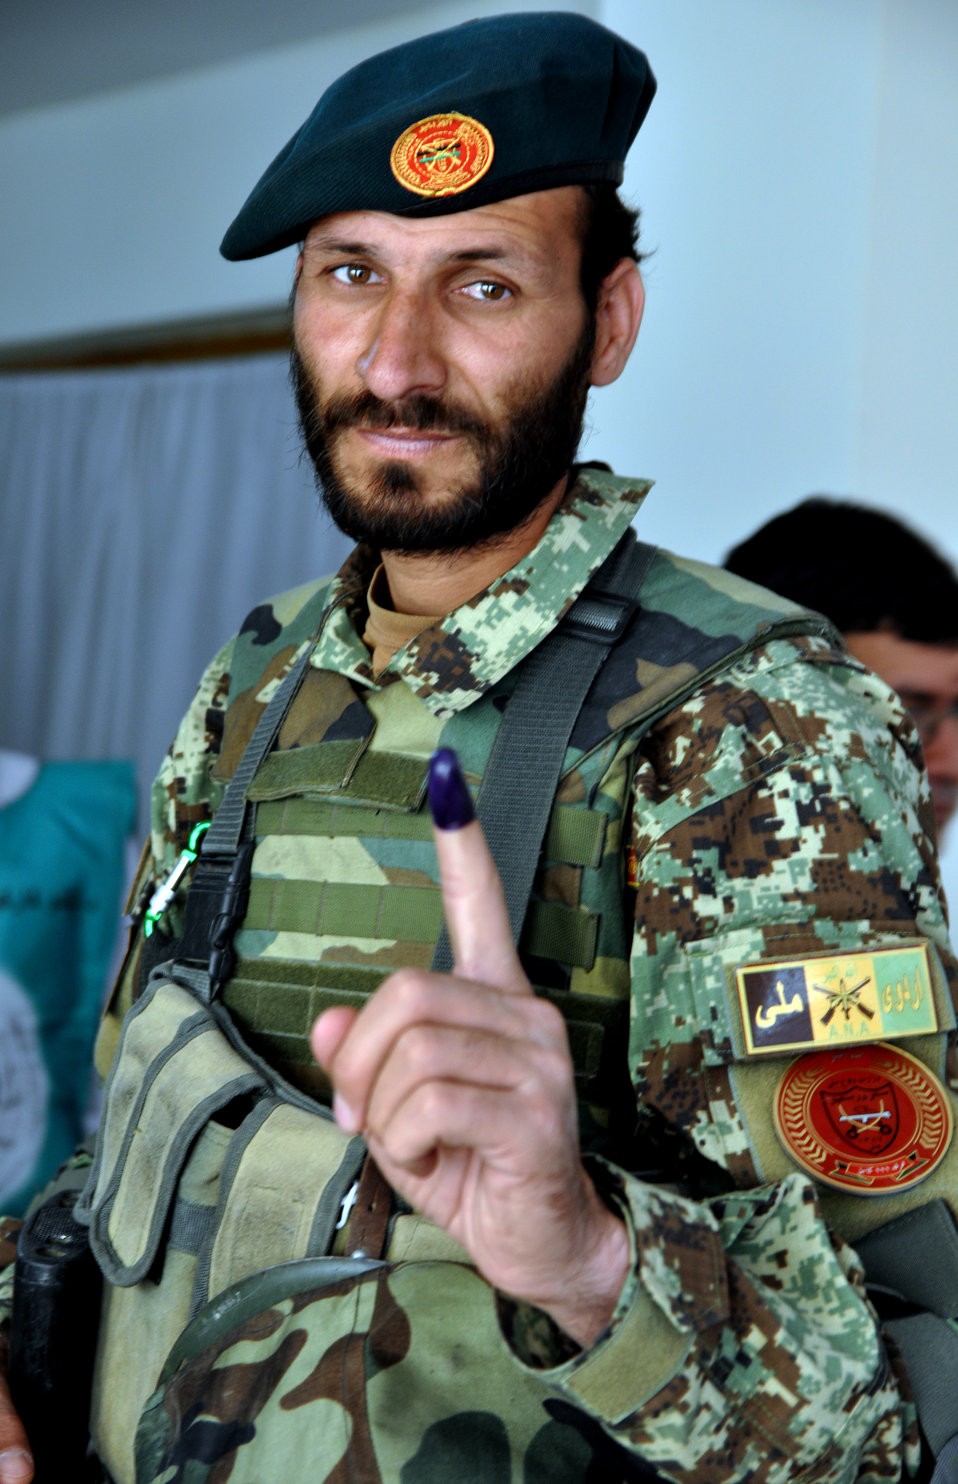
An Afghan National Army (ANA) officer shows his inked finger at a polling center in Kabul.